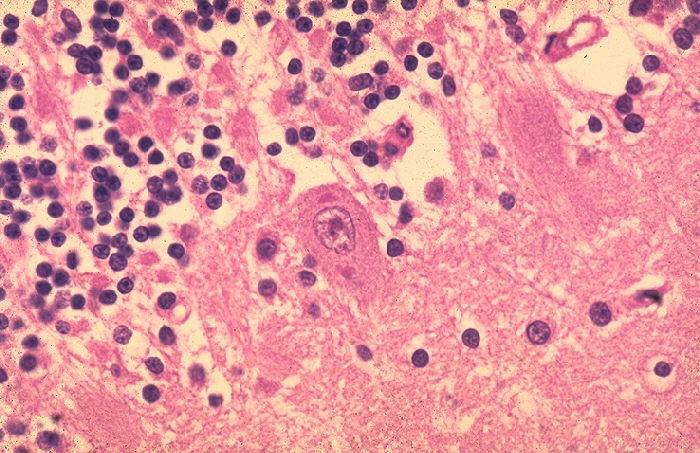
Histopathology of rabies, brain.